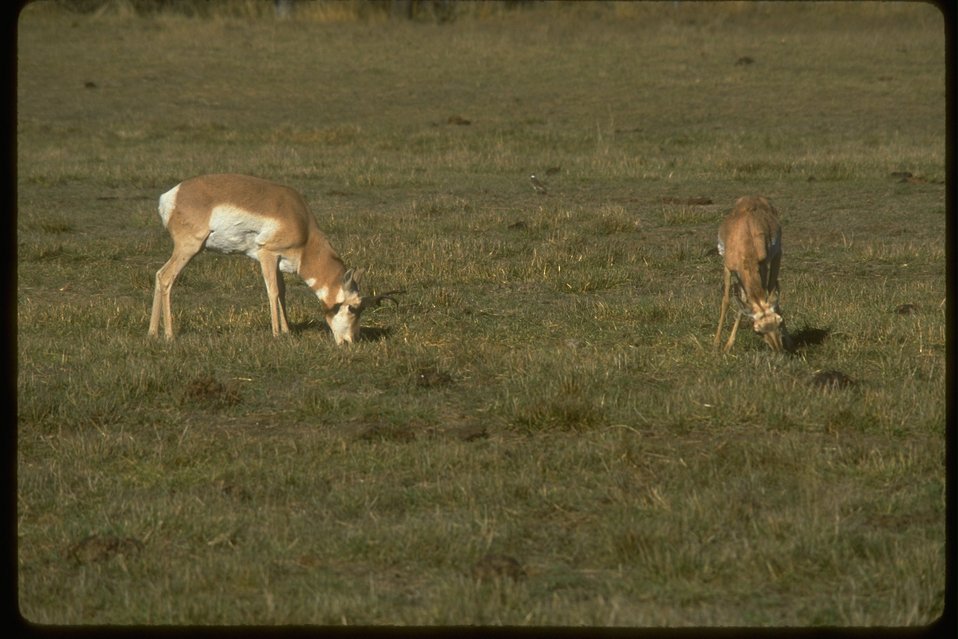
American Antelope.